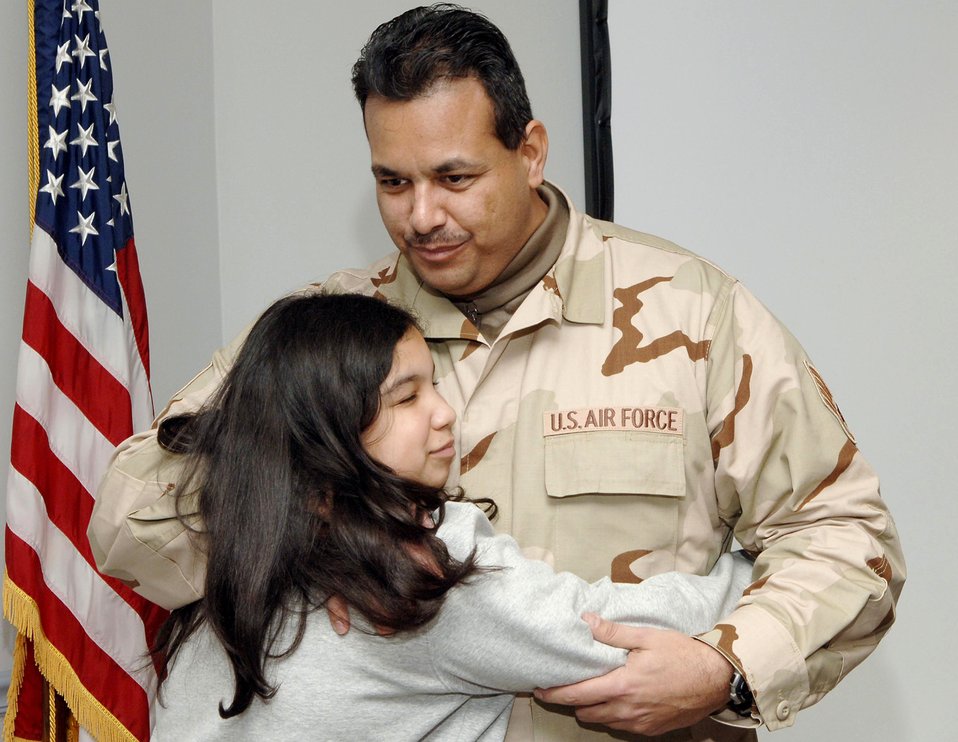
Saying goodbye

MCGUIRE AIR FORCE BASE, N.J. (AFPN) -- Staff Sergeant Edwin Tirado hugs his daughter, Ashley, during a farewell luncheon here Jan. 23. Sergeant Tirado is assigned to the 88th Aerial Port Squadron. Fourteen Airmen from the 88th and 35th APS deployed to Afghanistan for 120 days.